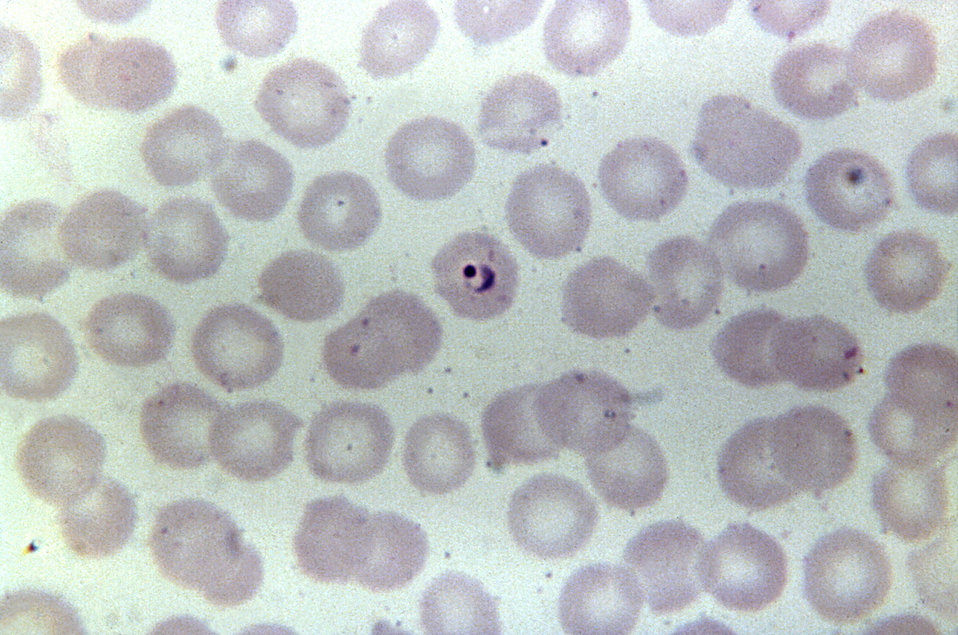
This thin film Giemsa stained micrograph depicts a ring-form Plasmodium ovale trophozoite.